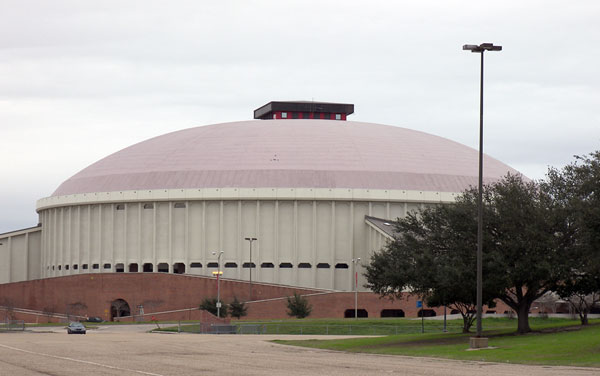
Photo of Cajundome in Lafayette, LA by Aaron charles